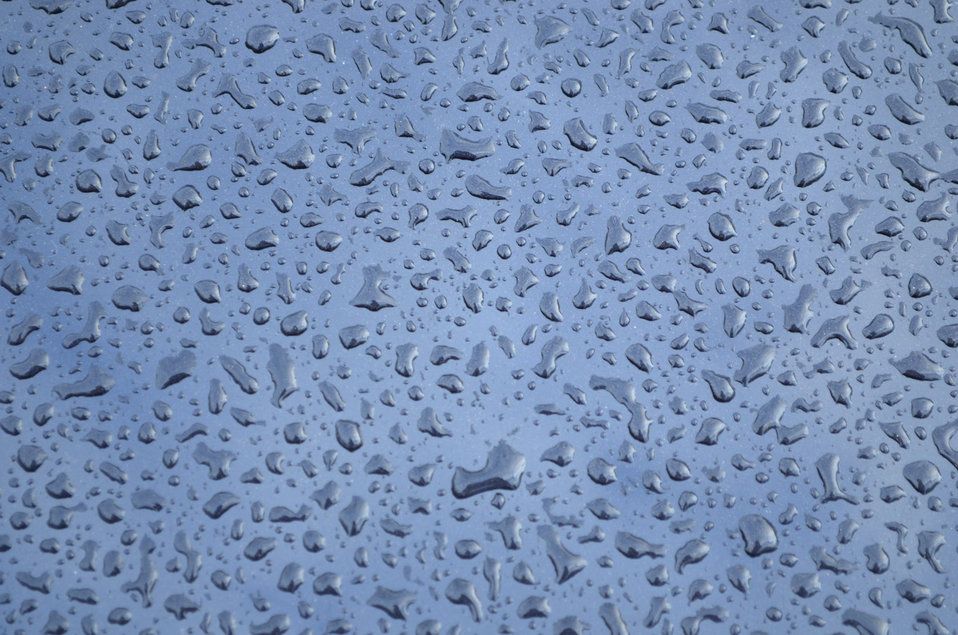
Raindrops on the hood of the car.